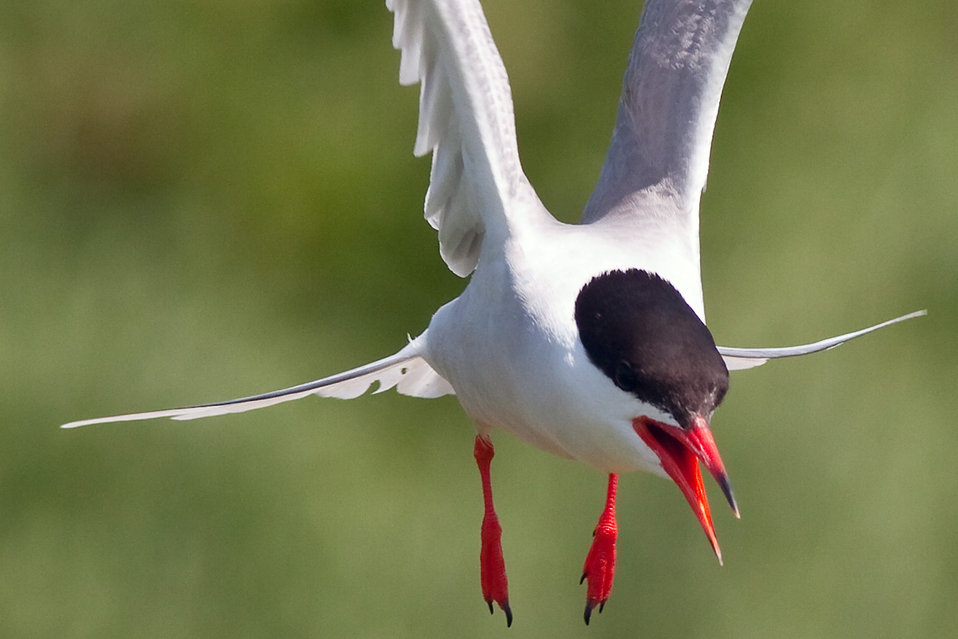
A common tern in flight

A common tern on Petit Manan Island, Maine Coastal Islands National Wildlife Refuge, Me.